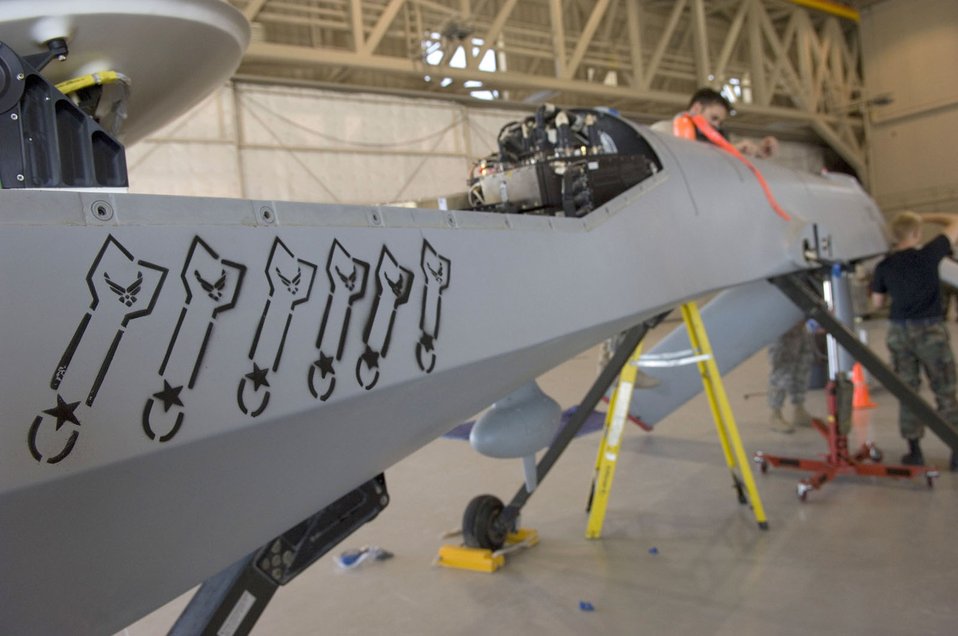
Predator, Reaper unit becomes air expeditionary wing

Airmen assigned to the 432nd Aircraft Maintenance Squadron assemble an MQ-1 Predator after returning from Afghanistan May 19 at Creech Air Force Base, Nev. The six images on the side of the MQ-1 Predator symbolize the number of Hellfire missiles shot while in combat.